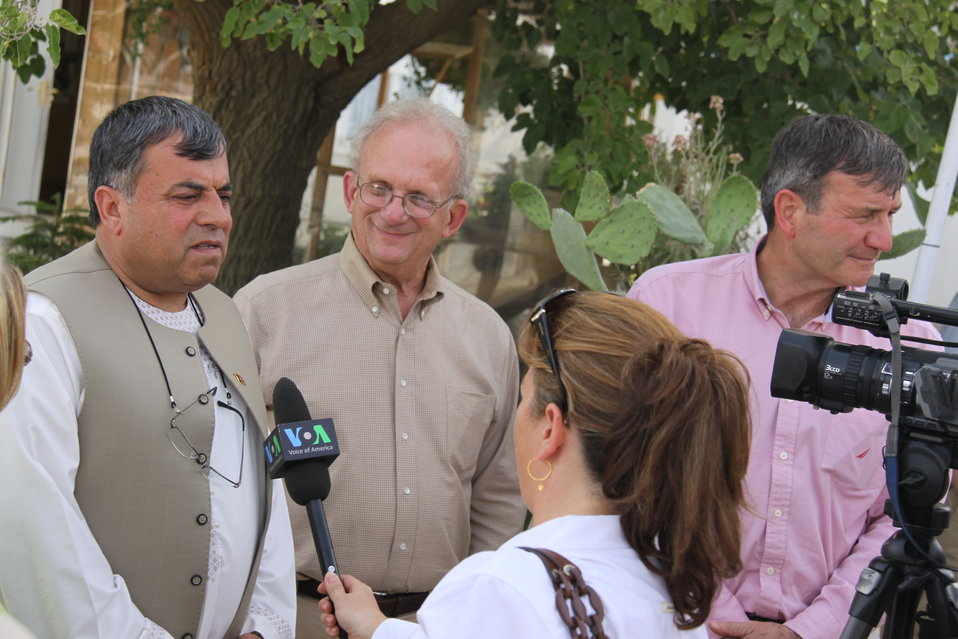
Meeting with Local Leaders in Kandahar